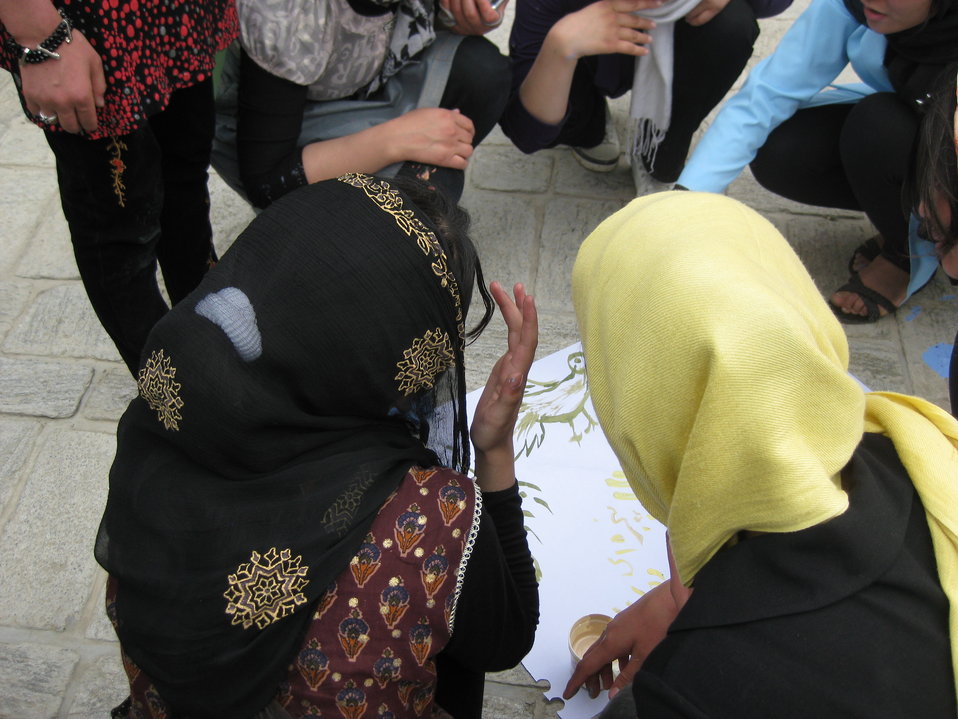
Afghan Youth Voices 083